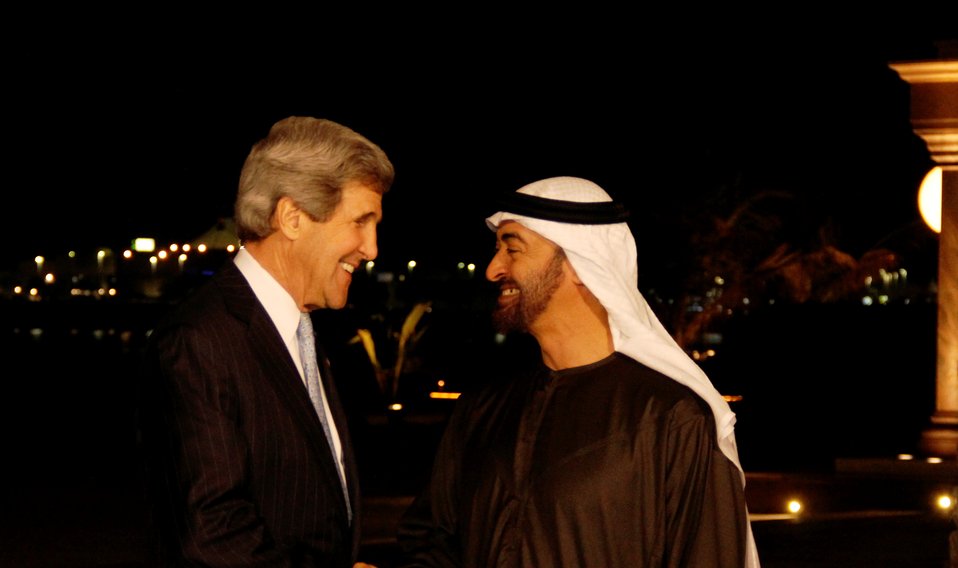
Secretary Kerry Is Greeted By Crown Prince Mohammed bin Zayed al Nahyan

U.S. Secretary of State John Kerry is greeted by Crown Prince Mohammed bin Zayed al Nahyan upon arrival in Abu Dhabi, United Arab Emirates, on March 4, 2013.